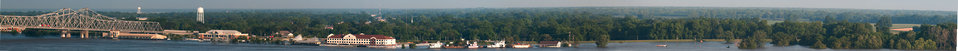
Virtual panorama of Vidalia, MS riverfront with flooding reaching historic levels near the Natchez–Vidalia Bridge which connects Natchez, Mississippi and Vidalia, Louisiana. Historic Front Street and the waterfront area where the Bryant O. Hammett, Jr. Vidalia Conference and Convention Center and a hotel are protected by temporary levees. The marina and other facilities were unprotected and left to flood on Thursday, May 19, 2011. The twin cantilever bridges carry US Routes 65, 84 and 425. Photos were taken within one minute period. USDA Photo Illustration by Lance Cheung. [Download for best viewing].